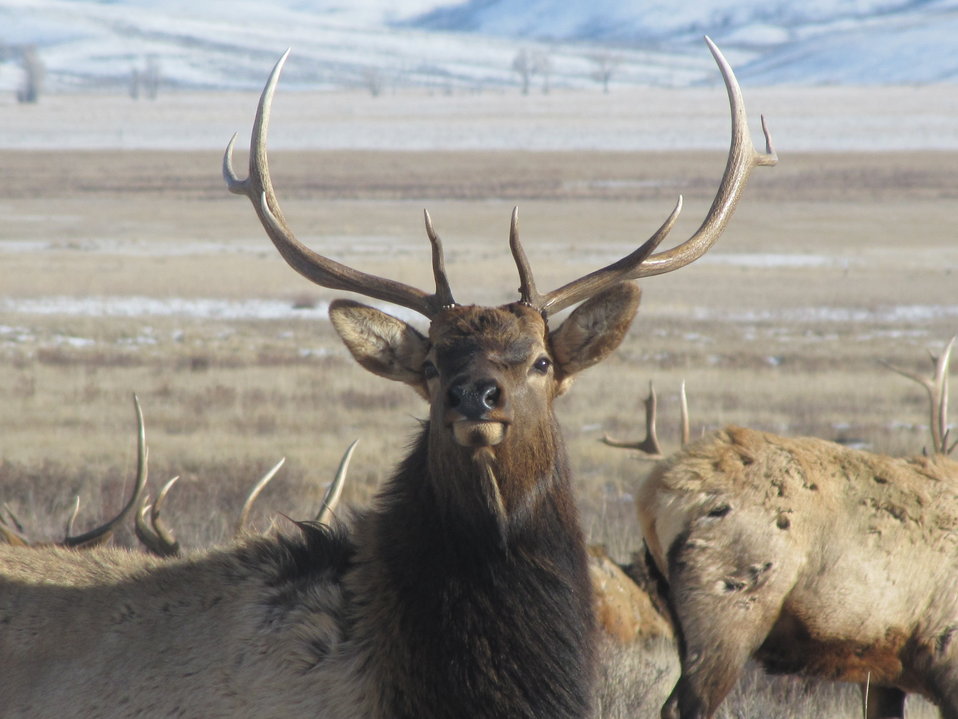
Heads Up

A male elk stands and raises his head among a group of bulls.